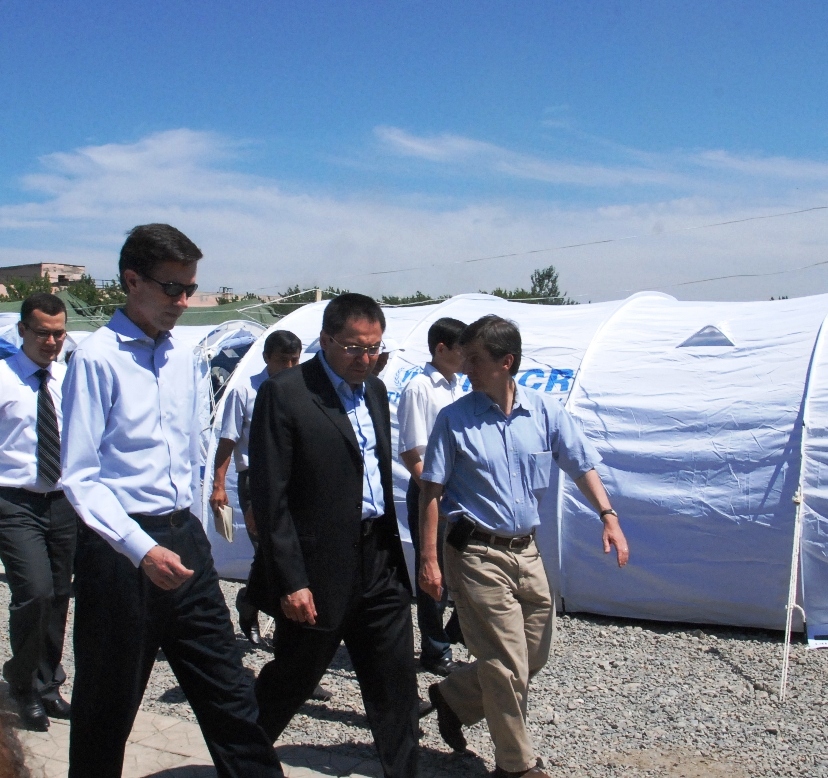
Assistant Secretary Blake Visits Refugee Camp in Uzbekistan

U.S. Assistant Secretary of State for South and Central Asian Affairs Robert O. Blake visits a refugee camp near Andijan, Uzbekistan, a city in Uzbekistan's densely populated Ferghana Valley near the Kyrgyz border, on June 18, 2010.